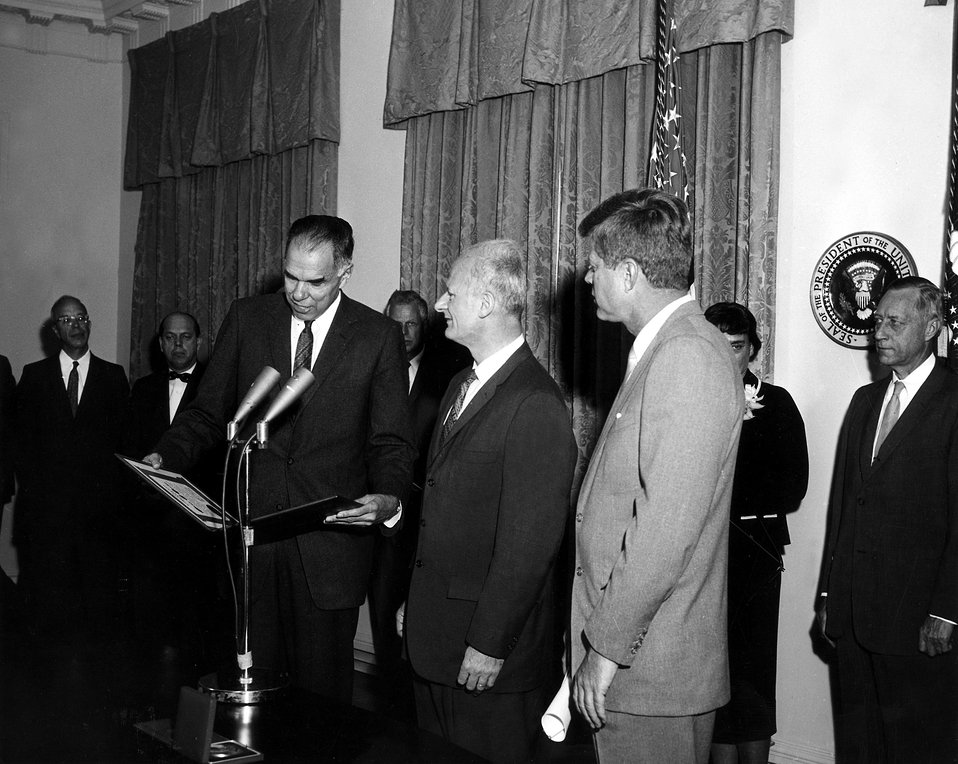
President John F. Kennedy.